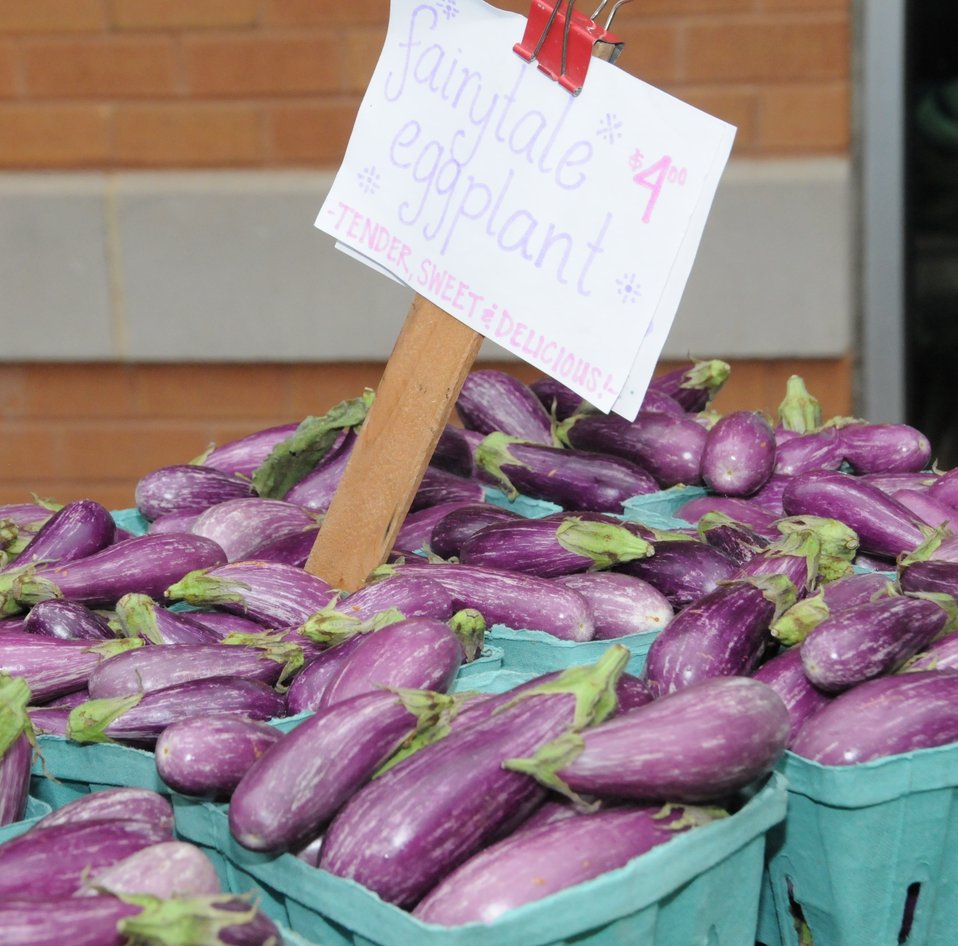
Fairy Tale Eggplant at the Columbia Heights Community Marketplace.